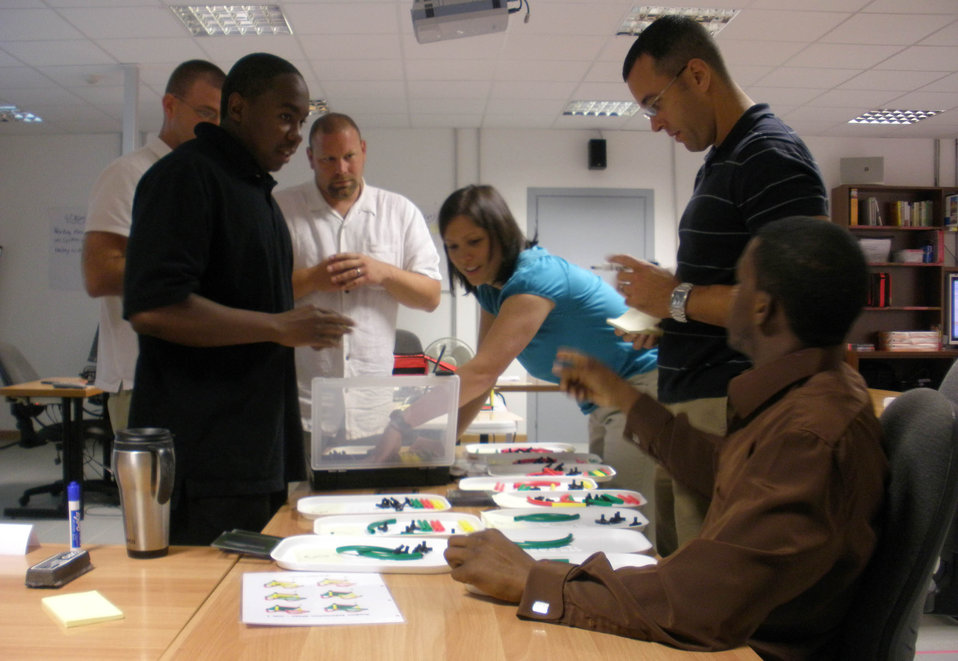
KanDo Lean class

Airmen work together to meet customer demand as part of a KanDo Lean class exercise Sept. 11, 2009, at Aviano Air Base, Italy. The class, which is offered through the Air Force Smart Operations 21 office here, allows attendees to receive training in a team-based environment to discover how to remove waste from a simulated process and relate that to what they do every day through active execution and discussion.